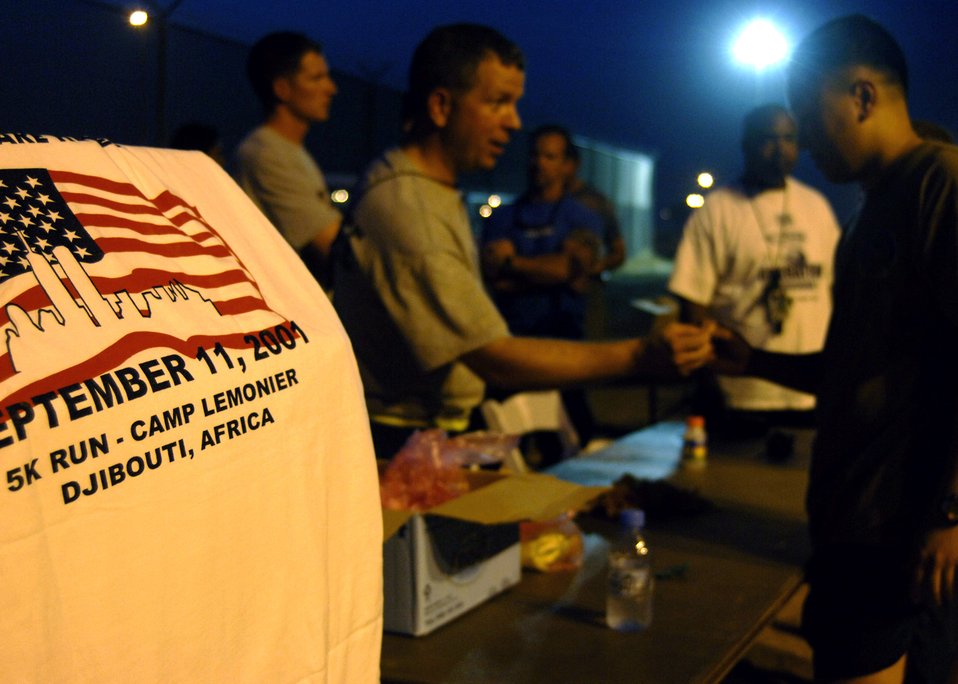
Sept. 11 remembered in Djibouti

Navy Petty Officer 1st Class Brent Arntzen registers runners for the Sept. 11 remembrance 5K run Sept. 11 at Camp Lemonier, Djibouti. The run kicked off a day of remembrance events on Camp Lemonier sponsored by the Combined Joint Task Force-Horn of Africa 2008 Navy chief selectees.